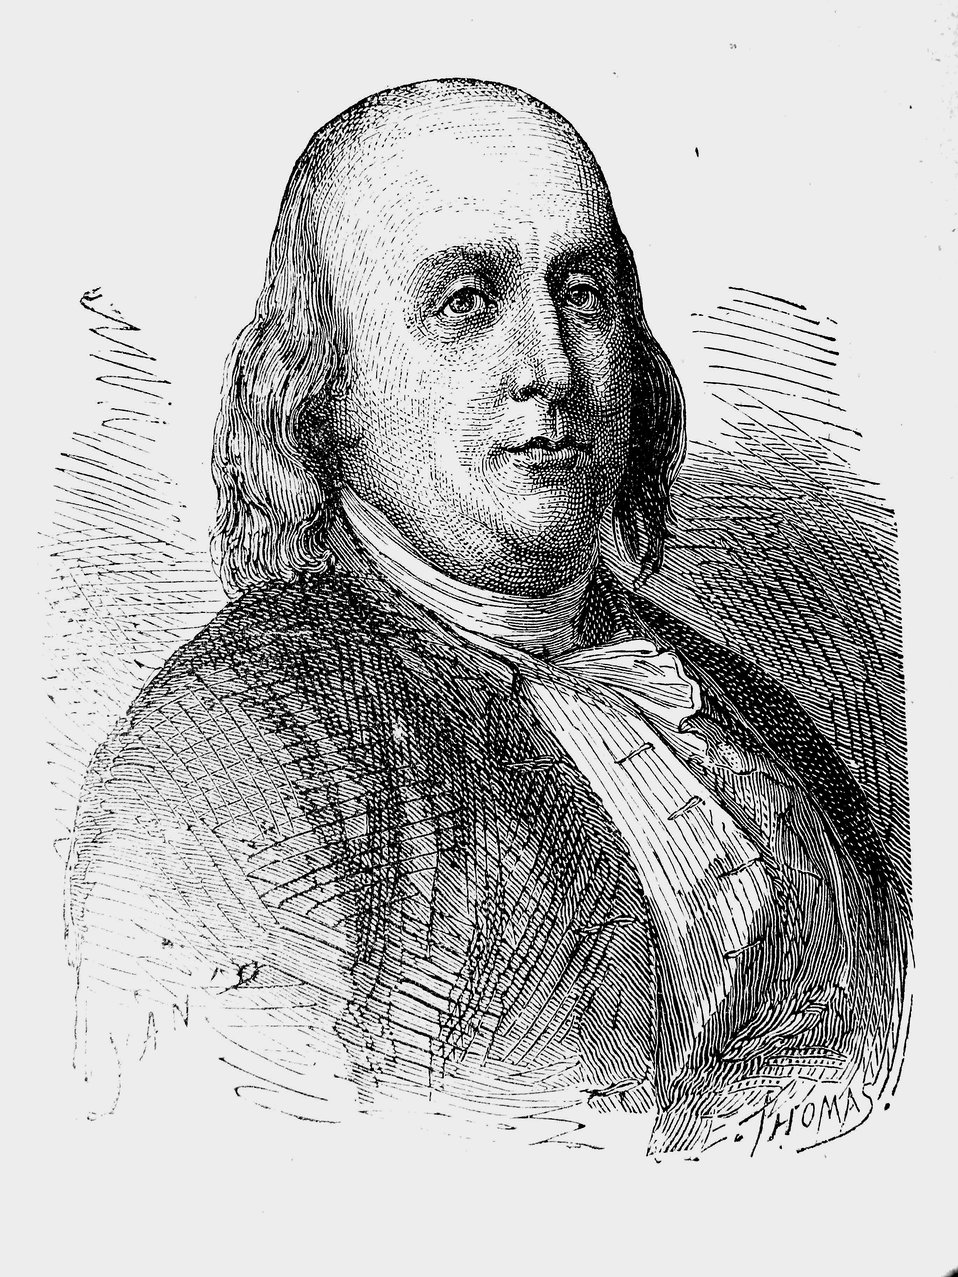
AduC 068 Franklin (B., 1706-1790)